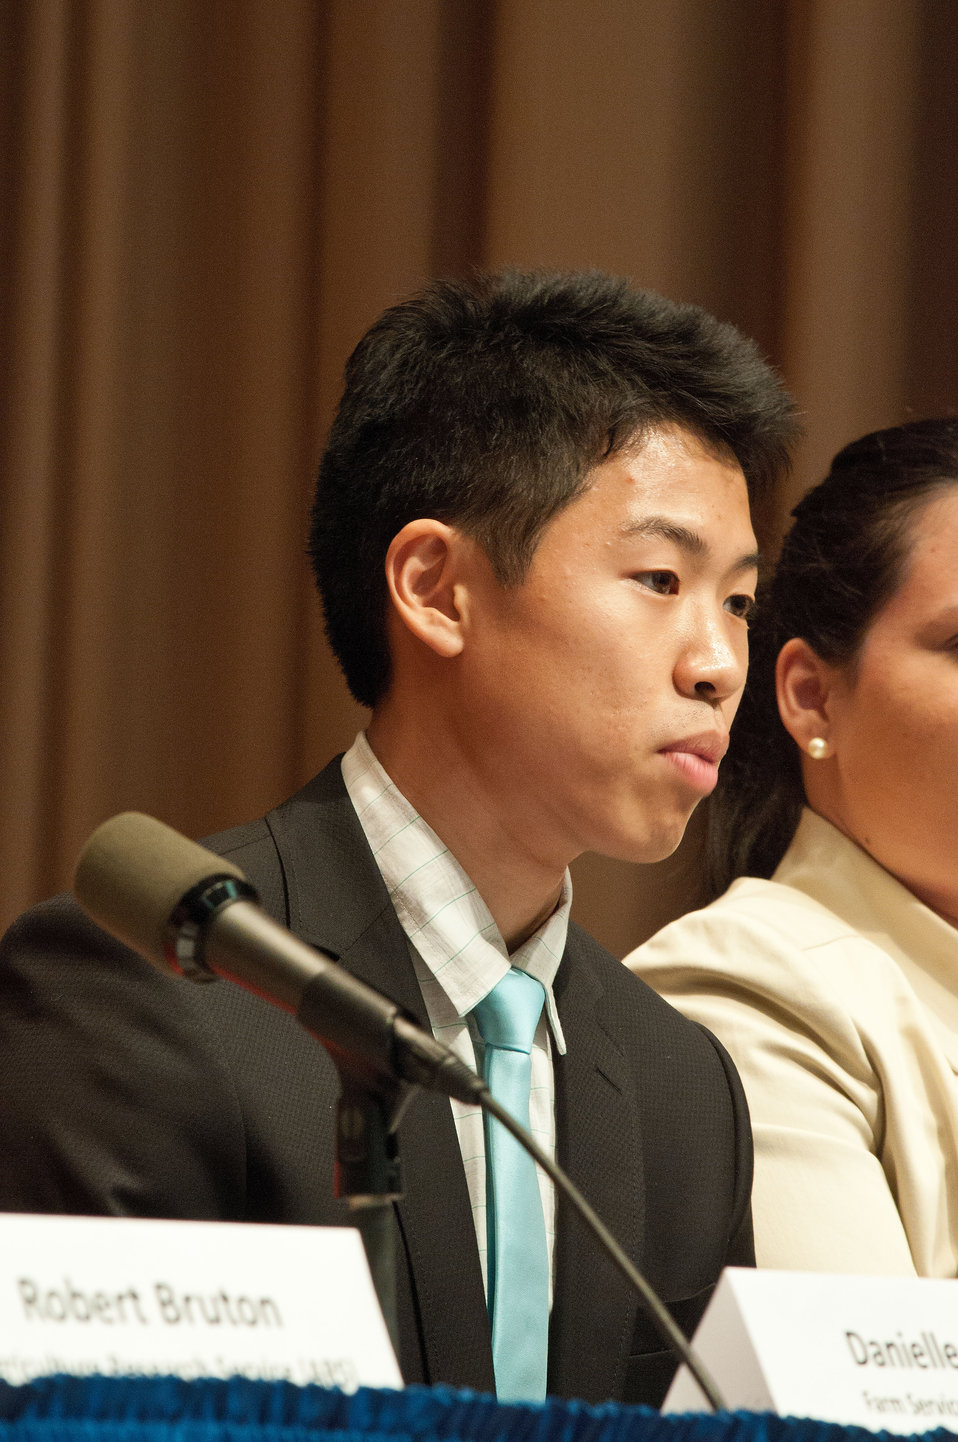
Jonathan Kim, Forest Service intern and panel member listens to questions from the audience at the United States Department of Agriculture Intern Day and Panel Discussion, Transforming USDA’S Tomorrow Today” in Washington, D.C., on Wednesday, July 11, 2012.